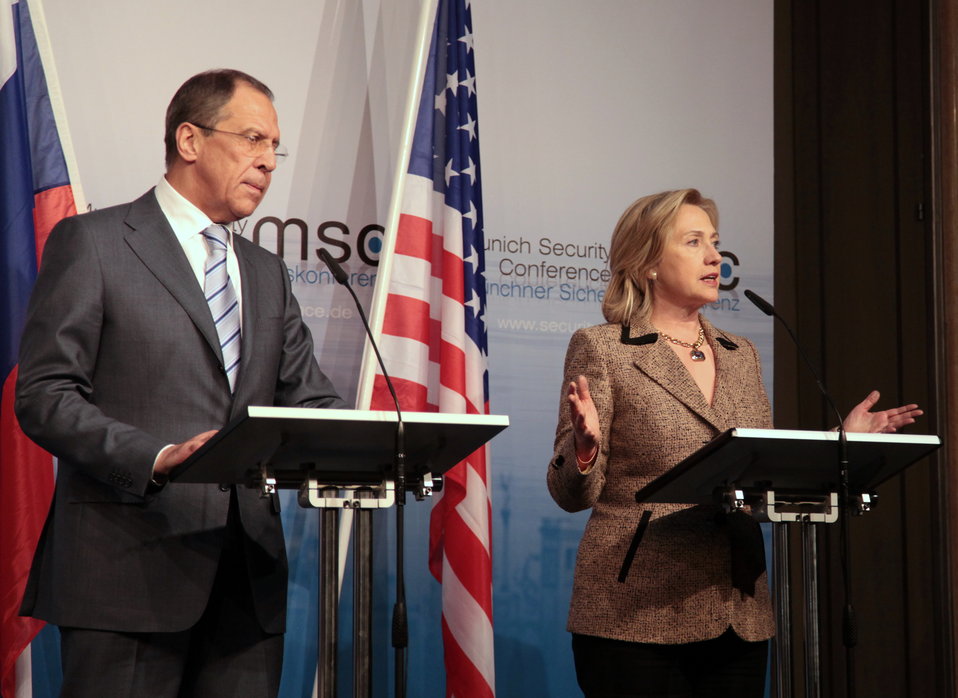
Secretary Clinton and Russian Foreign Minister Lavrov Deliver Remarks

U.S. Secretary of State Hillary Rodham Clinton and Russian Foreign Minister Sergey Lavrov deliver remarks after signing the New START Treaty at the Munich Security Conference in Munich, Germany, on February 5, 2011.